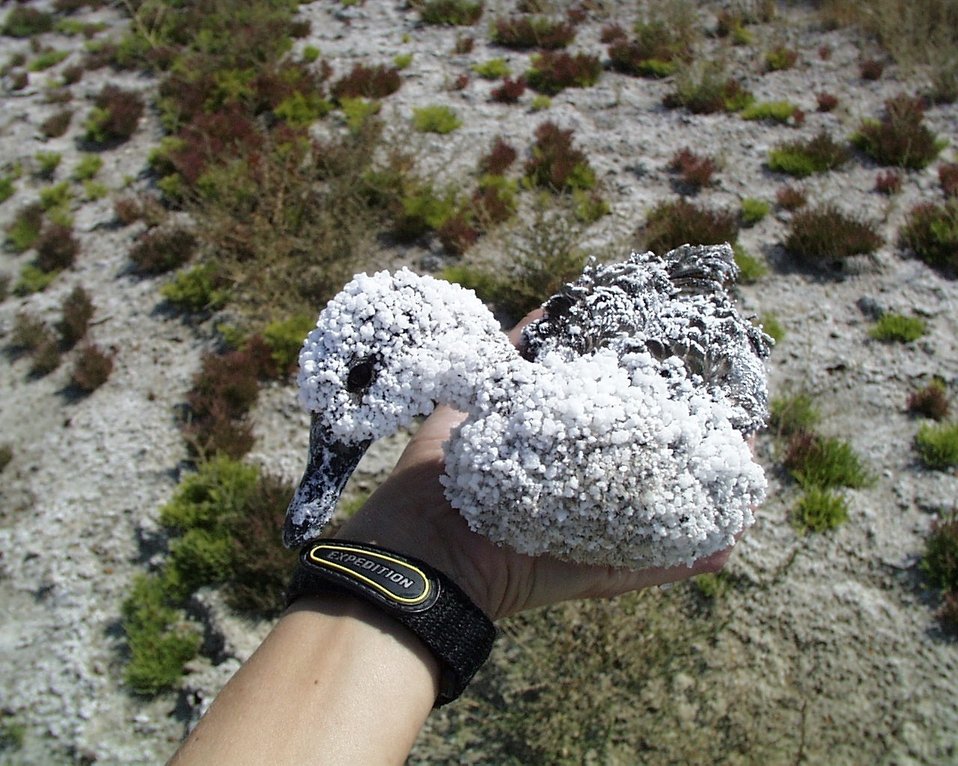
Salt-covered Bird

Environmental Contaminants Program and the Charles M. Russell (CMR) National Wildlife Refuge addressed salinity and selenium contamination on Hailstone National Wildlife Refuge, a satellite refuge of CMR. Waterfowl mortality events, and high selenium levels in waterfowl and shorebirds required action.